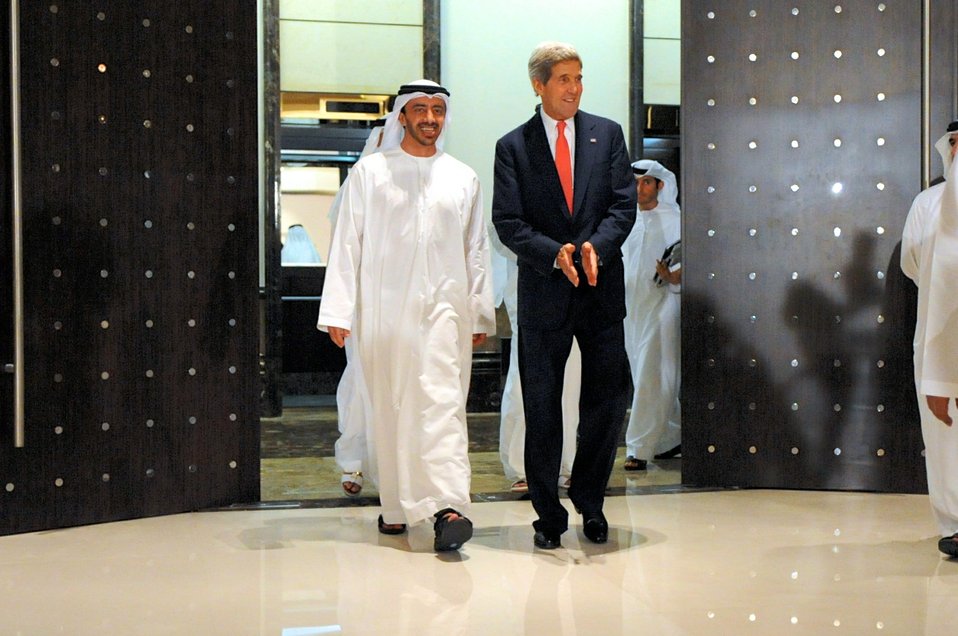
Secretary Kerry and UAE Minister of Foreign Affairs Al Nayhan Arrive for a Joint News Conference

U.S. Secretary of State John Kerry and United Arab Emirates Minister of Foreign Affairs Abdullah bin Zayed Al Nayhan arrive at a joint news conference in the Ministry of Foreign Affairs in Abu Dhabi, United Arab Emirates, on November 11, 2013.